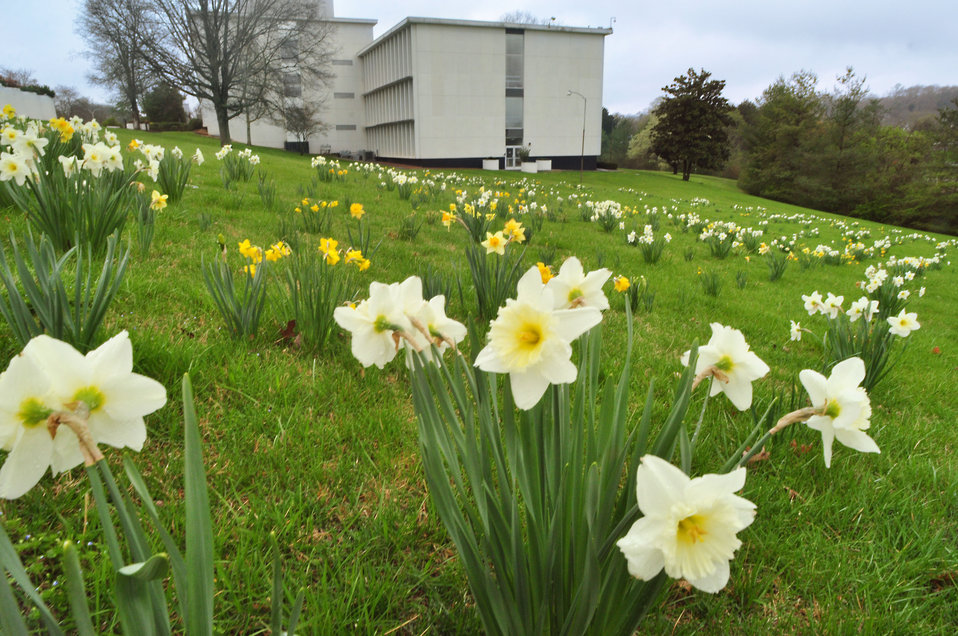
Daffodils in Bloom Federal Buiding 2014 Oak Ridge

14-044 DOE photo Lynn Freeny 4-3-2014 Oak Ridge Tennessee